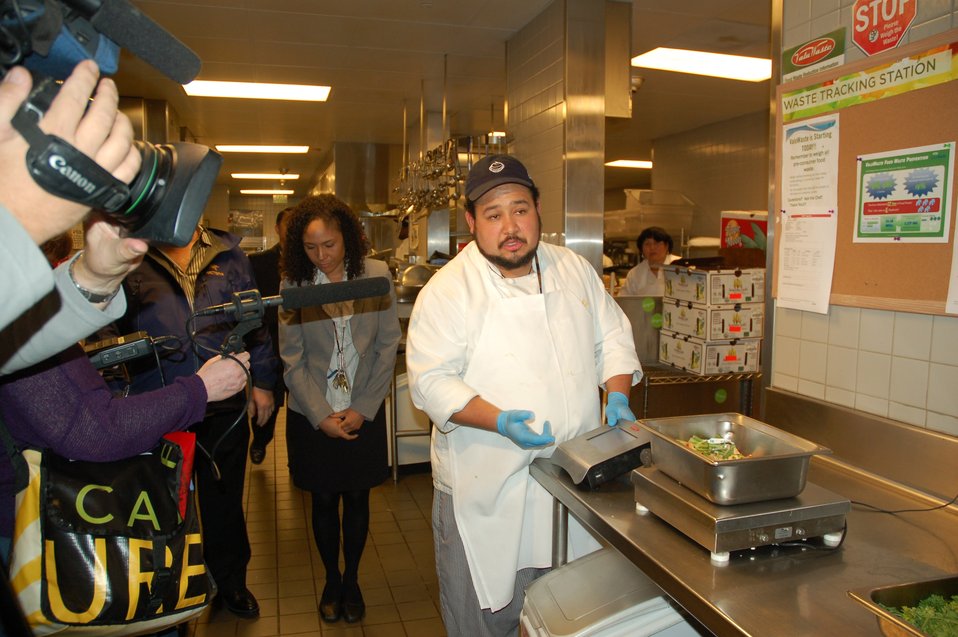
November 15, 2012, Food Waste and Savings

Tracking food waste saves UC Berkeley $1600 per week!

As part of the Food Recovery Challenge, the University of California at Berkeley measures how much food is wasted in their kitchen. This helps them make changes in purchasing and operations, saving them money and reducing their environmental impact.

More about the Food Recovery Challenge

January 3, 2012, “Campus Kitchens get Smart on Food Waste”